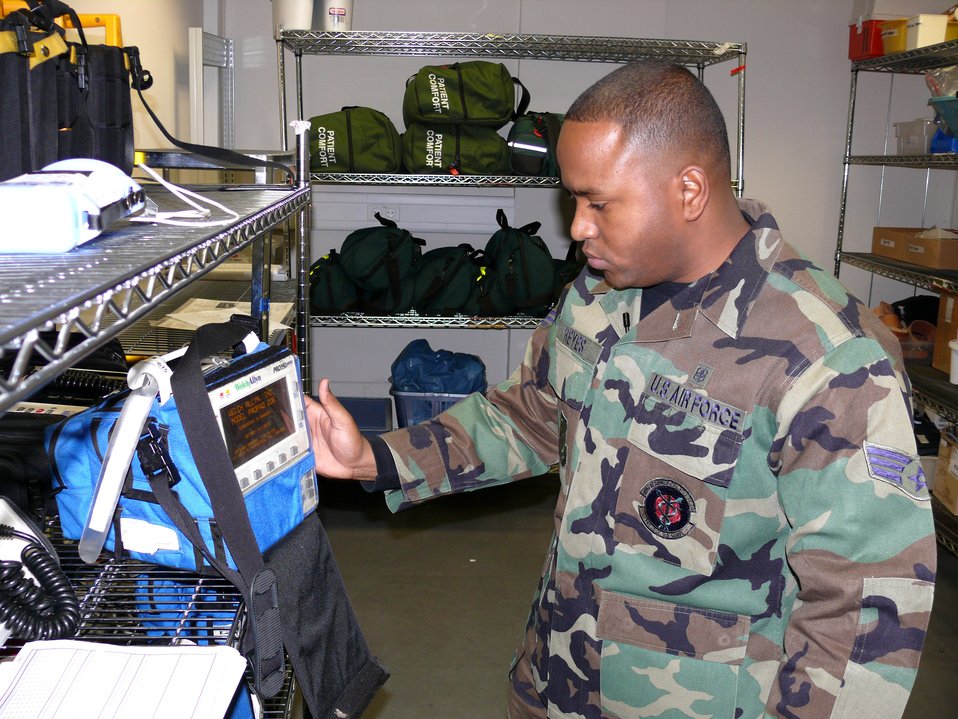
Serving through the season: Senior Airman Jose Reyes

Senior Airman Jose Reyes is an Air Force Reserve medical technician deployed to Ramstein Air Base, Germany.